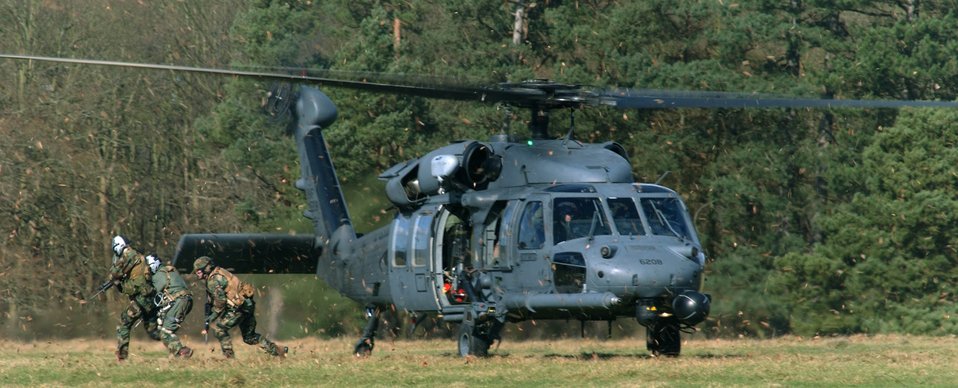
Practice makes perfect

Airmen from the 56th Rescue Squadron at Royal Air Force Lakenheath, England, perform a mock rescue March 7 during a combat survival training exercise at Stanta Training Range near Thetford, England.